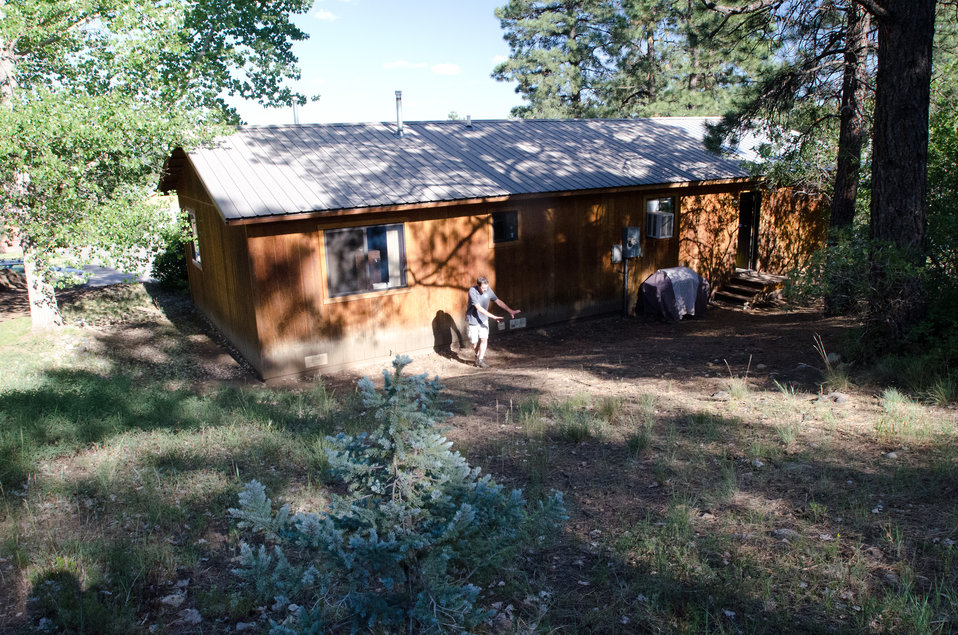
Colorado native and business owner Bruce Longwell points where he envisions a rear deck to his Durango, CO home on July 17, 2012. Mr. Longwell financed the single-family house with a U.S. Department of Agriculture (USDA) Rural Development (RD) Housing Assistance loan. This provided lower monthly payments than his prior rental home. Homeownership provides potential gains through home equity.